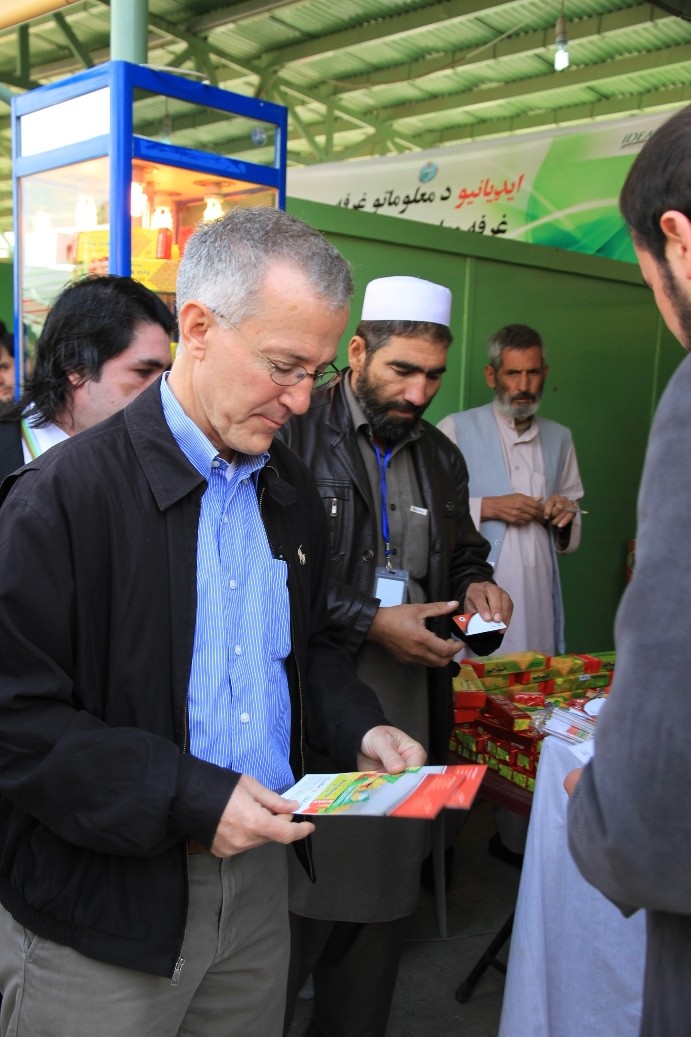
Ag.Fair, October 2013

William Hammink, USAID Afghanistan Mission Director, reads an IDEA-NEW designed brochure for Bahar Biscuits, at the Kabul International Ag.Fair, October, 2013